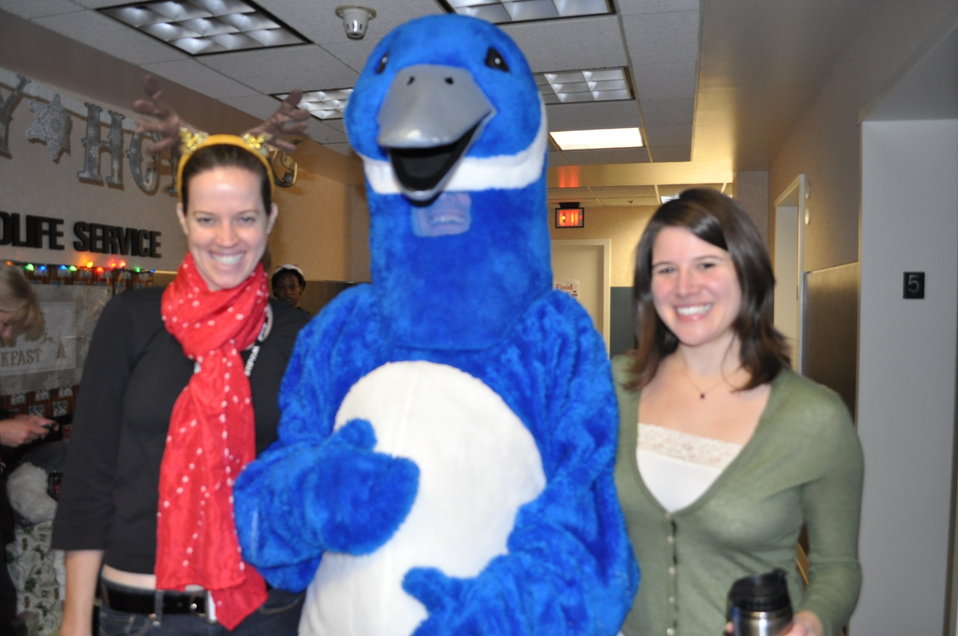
Puddles with some breakfast organizers

Puddles, the big blue goose, is the Service mascot.